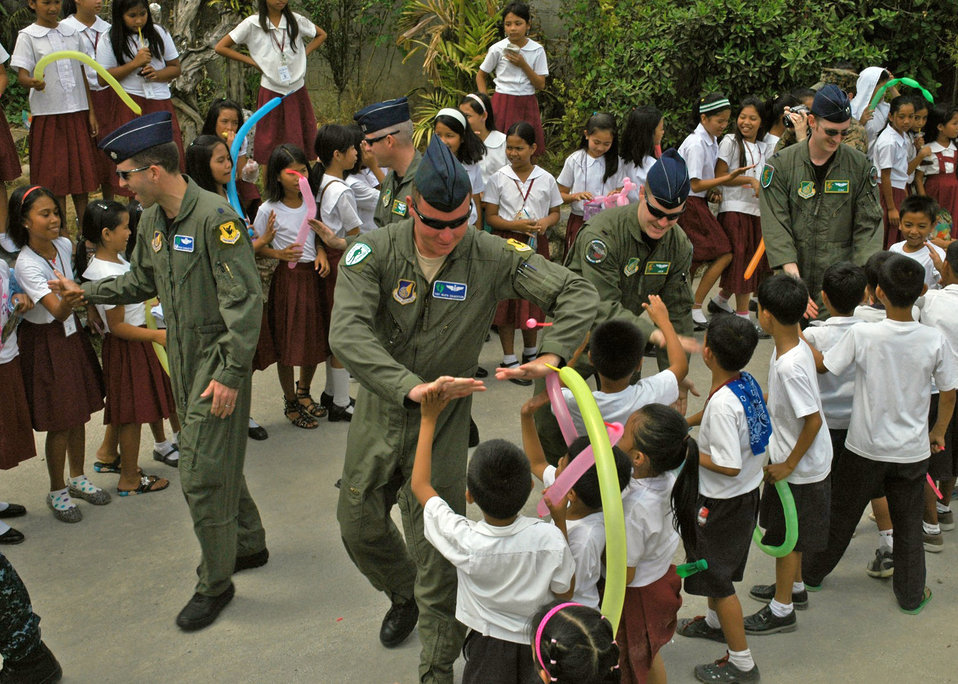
U.S., Philippine servicemembers visit school children

Students greet Air Force guests during a community relations visit 15, 2010, at Sapang Bato Elementary School in Angeles City, Philippines.